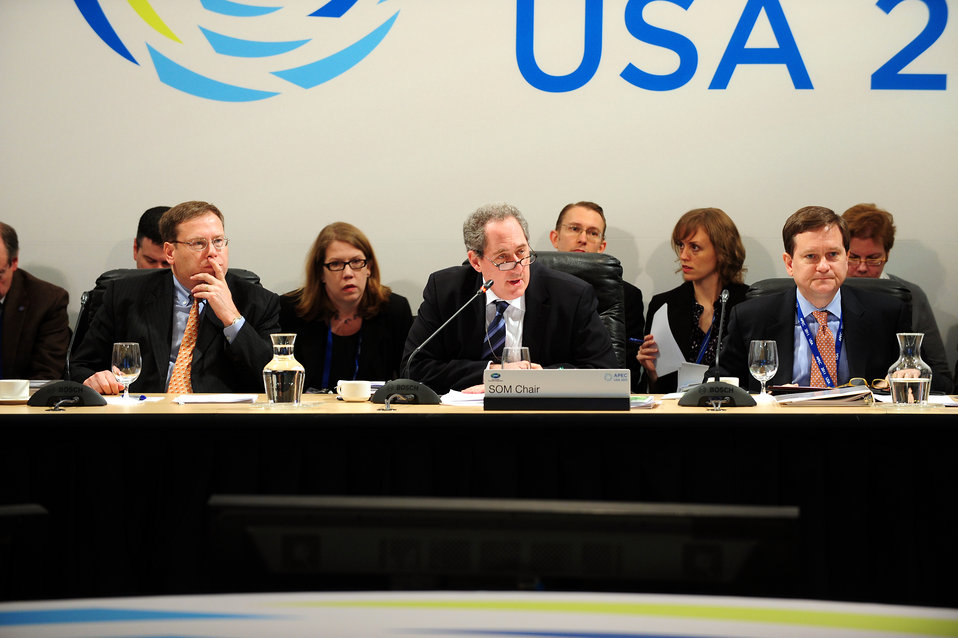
Chair Froman Delivers Remarks

Chair Michael Froman delivers remarks at the open plenary of the Asia Pacific Economic Cooperation (APEC) Senior Officials Meeting (SOM1) in Washington, D.C., on March 11, 2011.